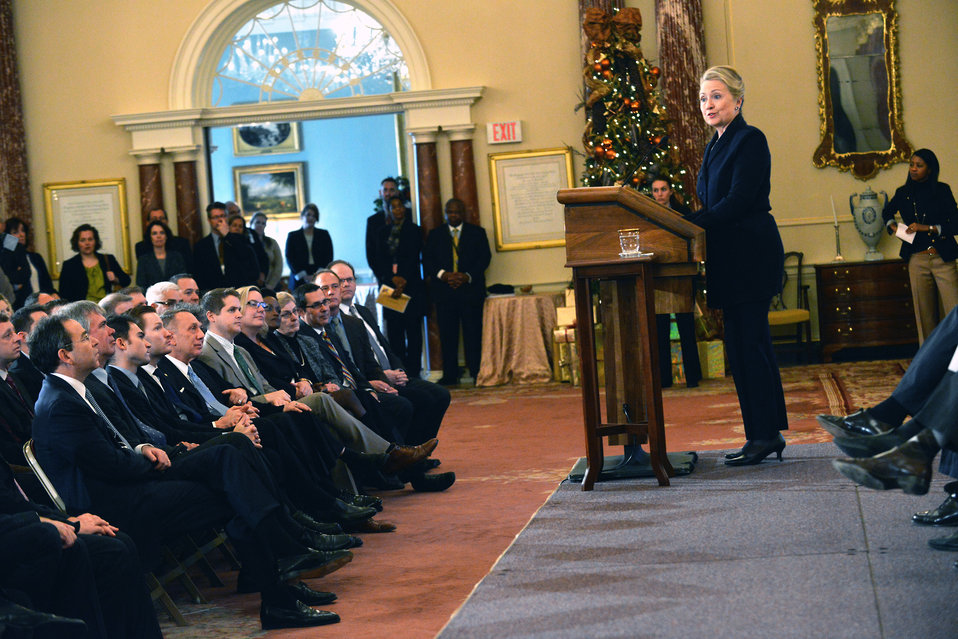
Secretary Clinton Delivers Remarks at the GLIFAA 20th Anniversary Celebration

U.S. Secretary of State Hillary Rodham Clinton delivers remarks at the Gays and Lesbians in Foreign Affairs (GLIFAA) 20th Anniversary celebration at the U.S. Department of State in Washington, D.C., November 28, 2012.